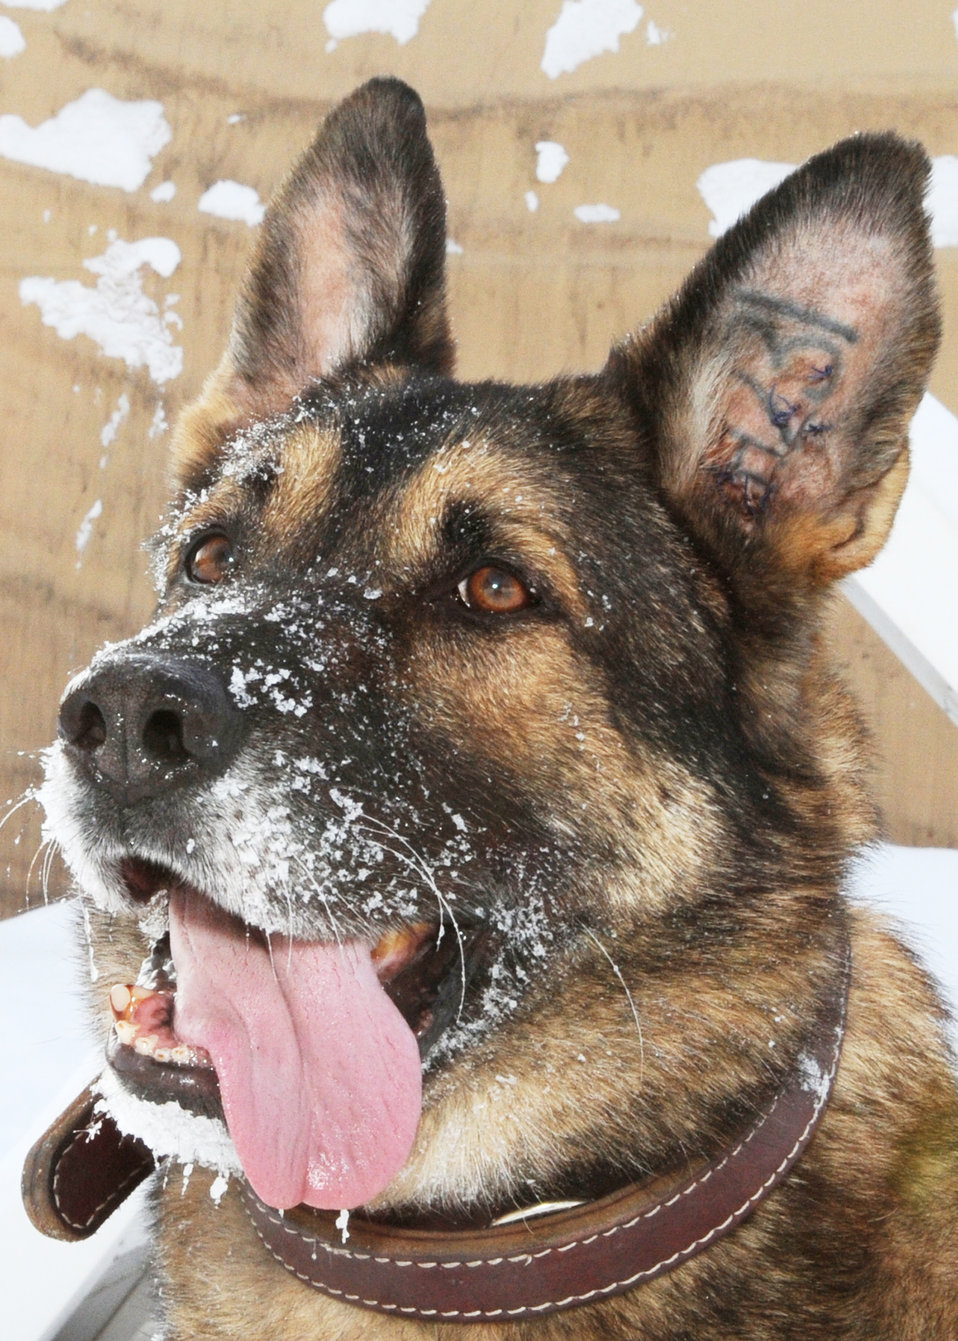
K-9 without a canine keeps working

Arek is a military working dog deployed to the Transit Center at Manas, Kyrgyzstan, who has been in two explosions while on patrol in Iraq. He and his handler, Staff Sgt. Patrick Lau, are from Hill Air Force Base, Utah.